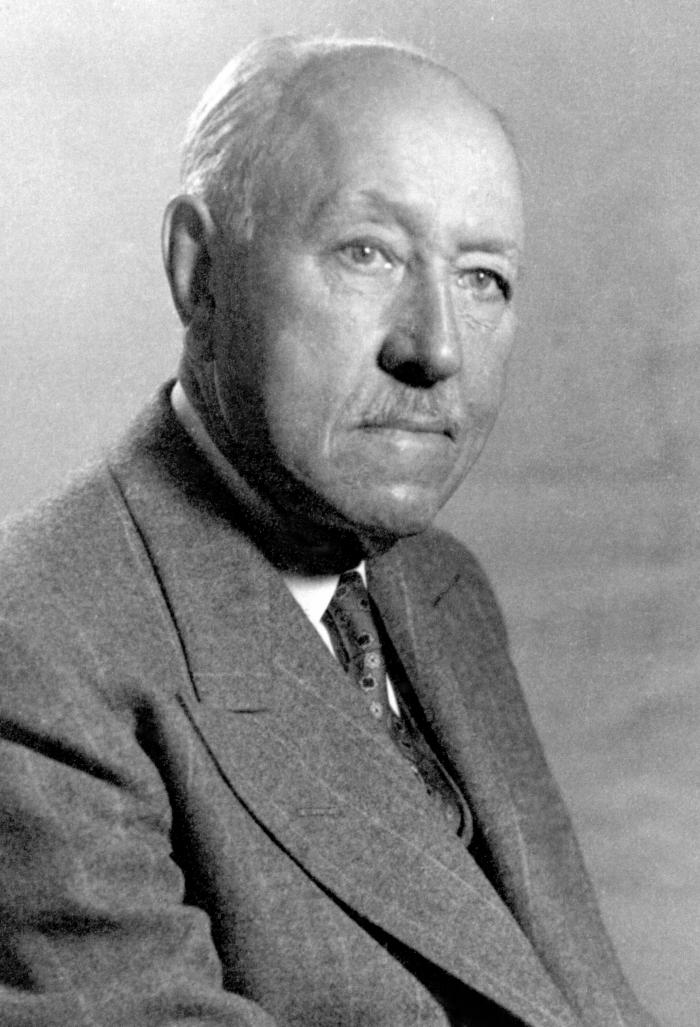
Dr. Frederick S. McKay's observations of the effects of fluoride in drinking water led to today's modern fluoridation process.